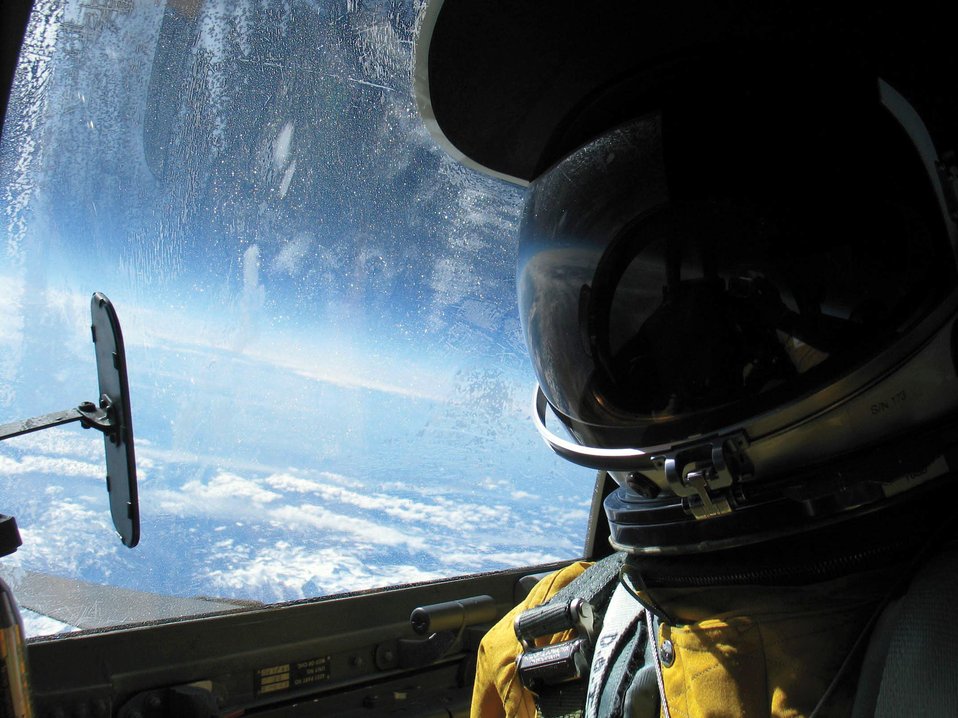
Palmdale detachment takes testing to new heights

Col. Chris Cook gets a sweeping view of California from 71,000 feet during a recent flight in a U-2 Dragon Lady. Colonel Cook is the 412th Operations Group commander at Edwards Air Force Base, Calif.